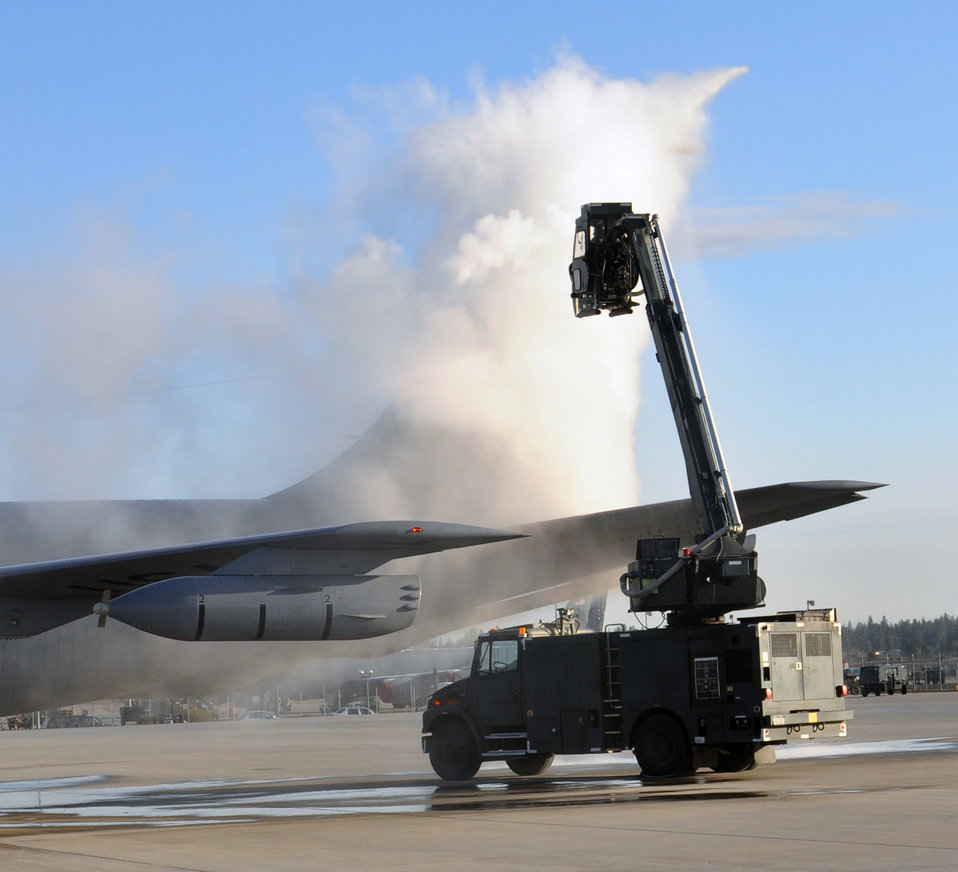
KC-135 crews support global missions

Fairchild 92nd and 141st Air Refueling Wings maintenance crews de-ice a KC-135 Stratotanker prior to its take off from Spokane International Airport to support operation Odyssey Dawn March 23, 2011. Tankers will provide fuel to Air Force, Navy and NATO fighter aircraft through out the operation.